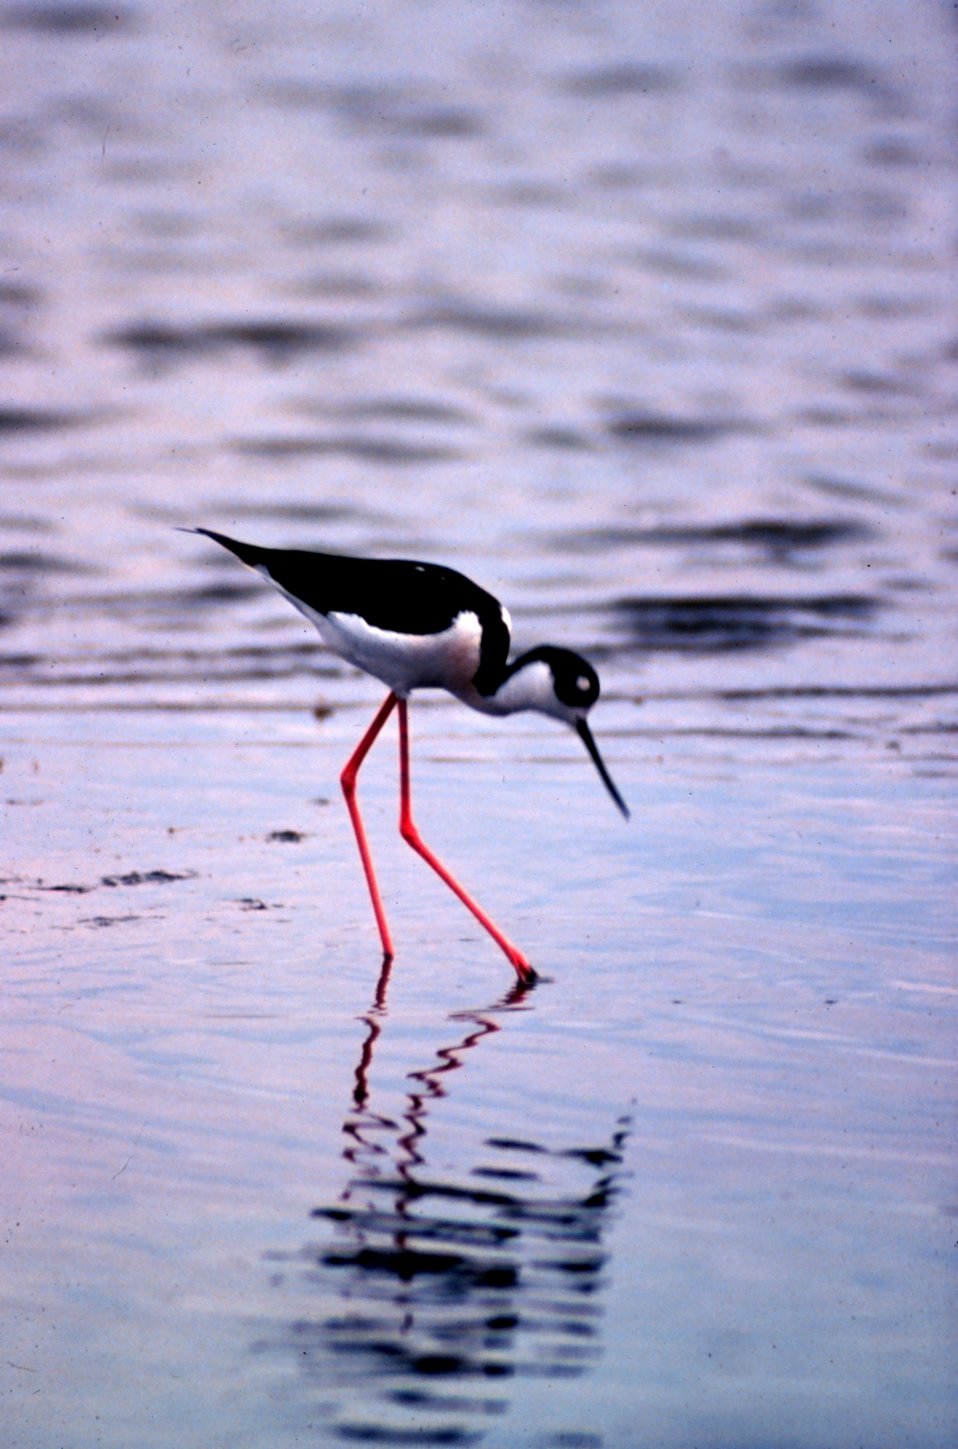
ACE Basin National Estuarine Research Reserve. A black-necked stilt hunting for its dinner.